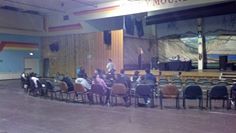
Drug facts week for ESCAPE Project in Wyoming-6